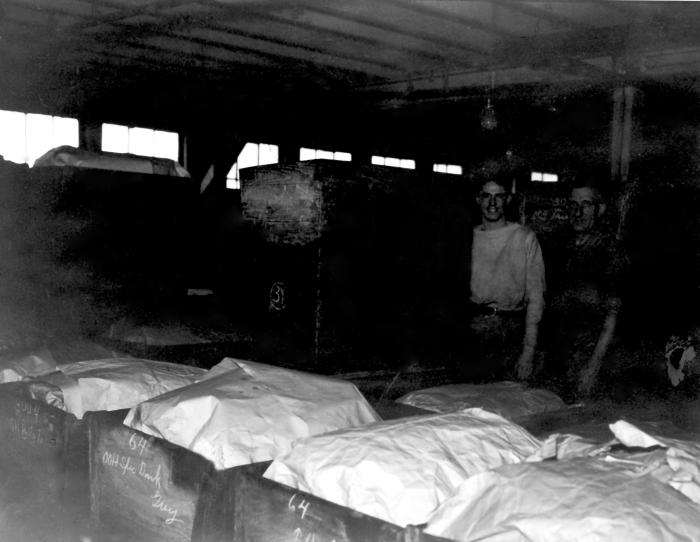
Provided by the Center for Disease Control's (CDC), National Institute for Occupational Safety and Health (NIOSH), this historic image, shot inside a Connecticut hat manufacturing plant, depicted two hat manufactures that were standing adjacent to bins of newly processed furs, which would later be used in the creation of new hats. The furs would have been 'carroted' prior to having been loaded into these bins. Carroting is the process of treating 'hatters'' fur with mercury nitrate, thereby, rendering the fur suitable for manufacturing hats. If precautions were not taken, such as wearing a filtered breathing mask, or gloves, mercury exposure was quite likely, and could have lead to heavy metal poisoning, with severe pathologic neurological consequences. Note that these men were not wearing protective filtered breathing masks, or gloves.